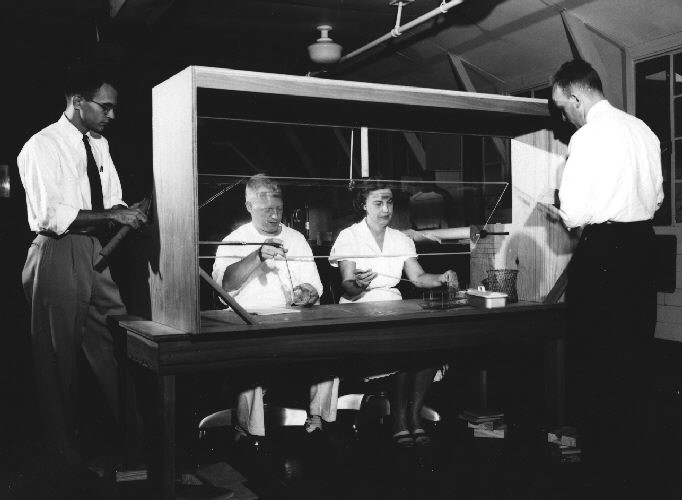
Biological Safety Unit